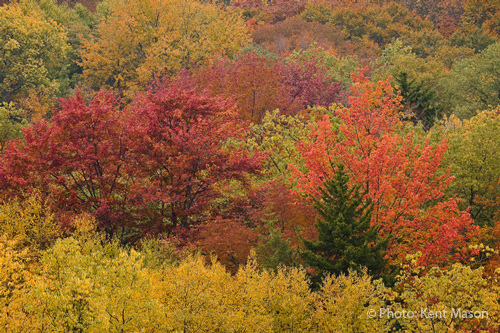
Fall Patchwork in Canaan Valley, West Virginia